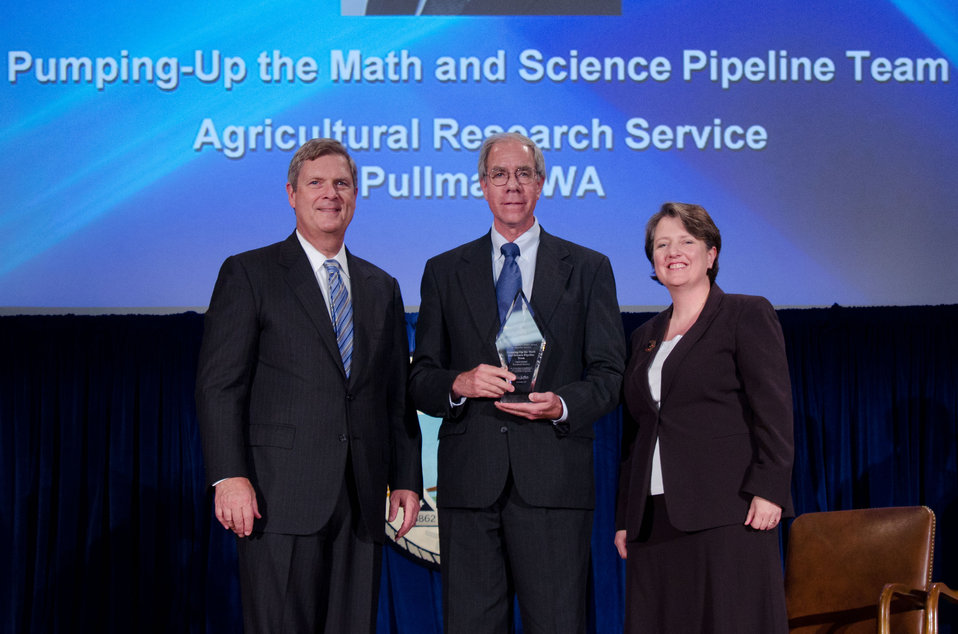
Agriculture Secretary Tom Vilsack (l) and Deputy Secretary Kathleen Merrigan (r), presents the Award for Diversity. Pumping—up the Math and Science pipeline Team, Agricultural Research Service, Pullman, WA. David M. Weller, Group Leader. For developing innovative outreach programs in Science, Technology, Engineering, and Mathematics to enhance the education of an provide research training for underserved youth from reservation and other rural communities. On Wednesday, September 14, 2011 in the Jefferson Auditorium at the US Department of Agriculture in Washington, DC.